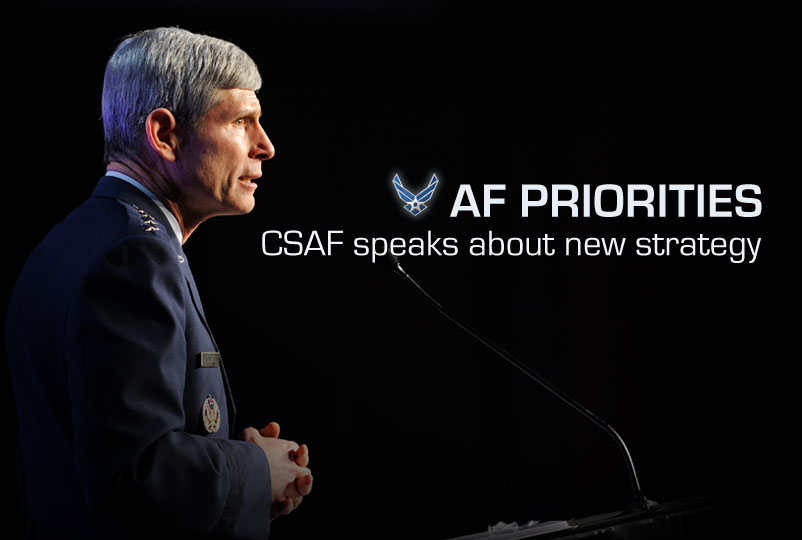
CSAF talks AF priorities